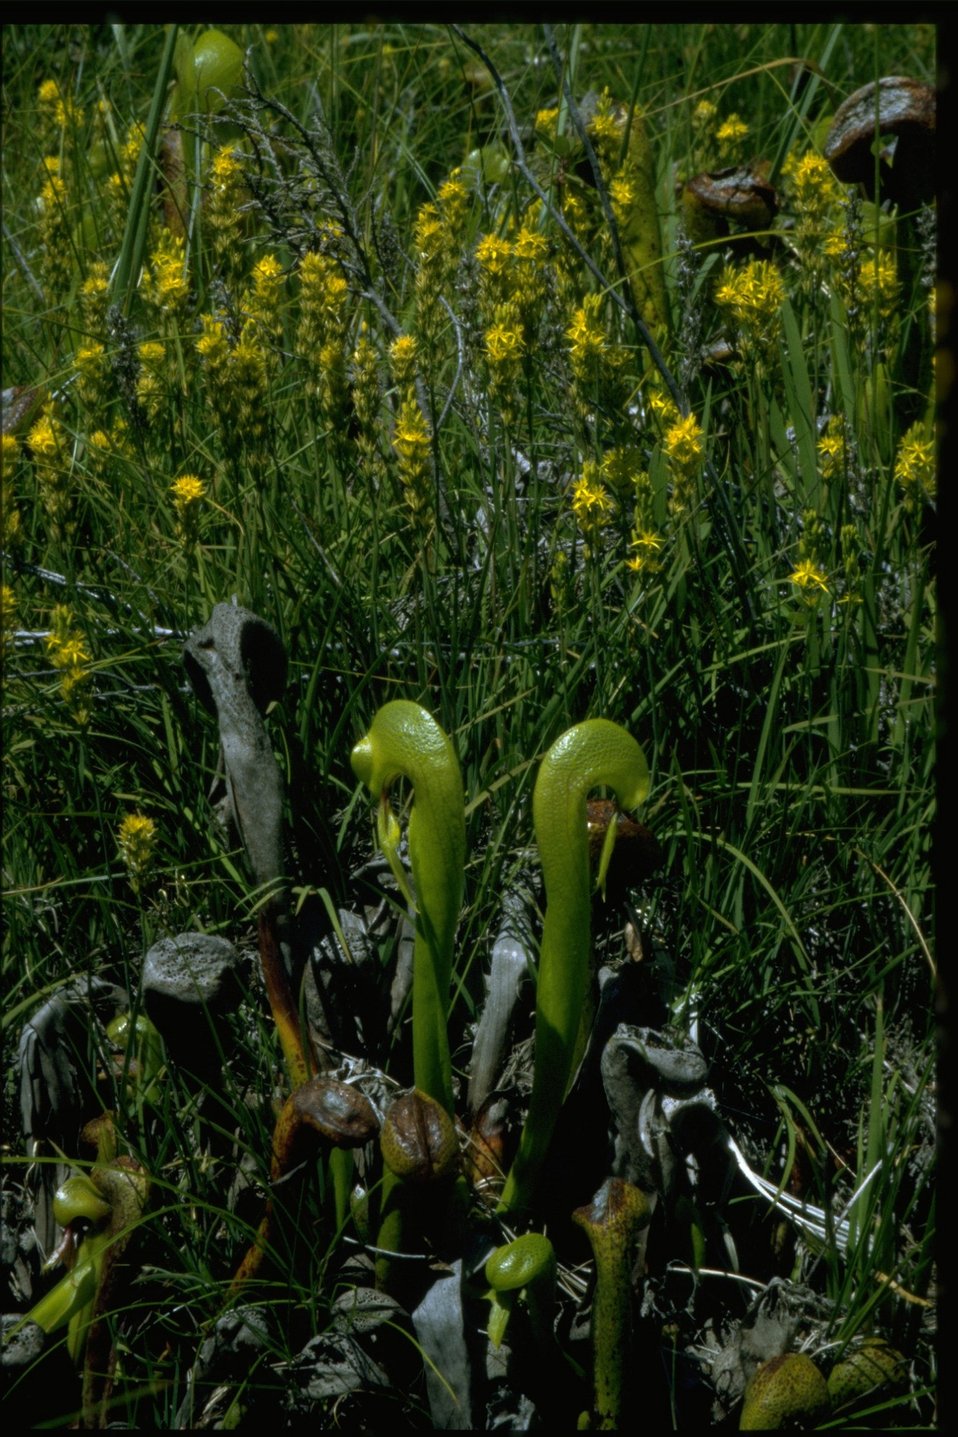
Farshot of Northecium californicum, Darlingtonia californica (Cobra Lily)..